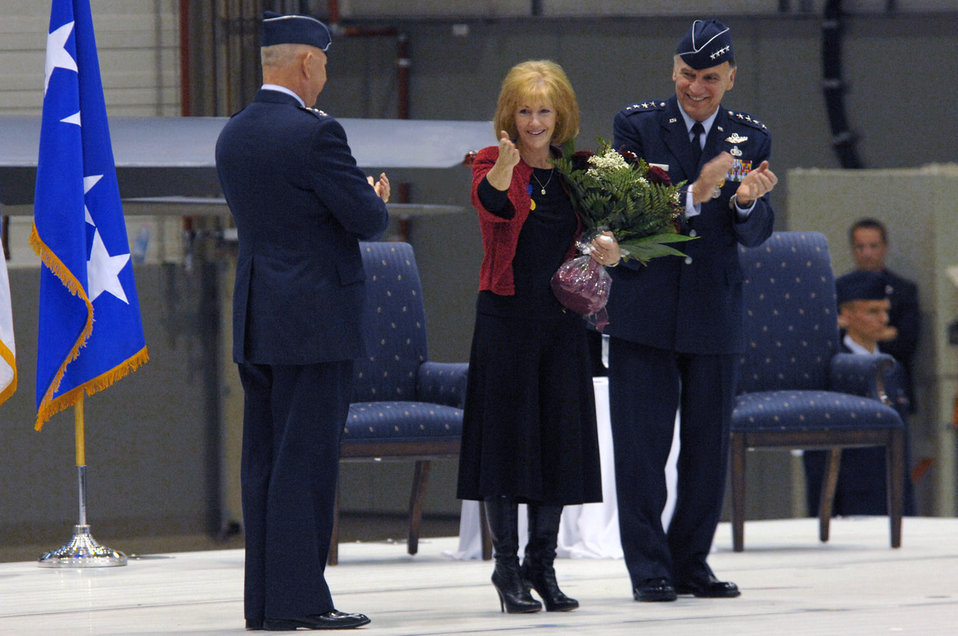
USAFE Commander retires after 38 years of service

Air Force Chief of Staff Gen. T. Michael Moseley and Gen. William T. Hobbins, U.S. Air Forces in Europe commander applauds as Robbin Hobbins says thank you with a good-bye kiss to the Ramstein family during General Hobbins' retirement ceremony Ramstein Air Base, Germany, Dec. 10.